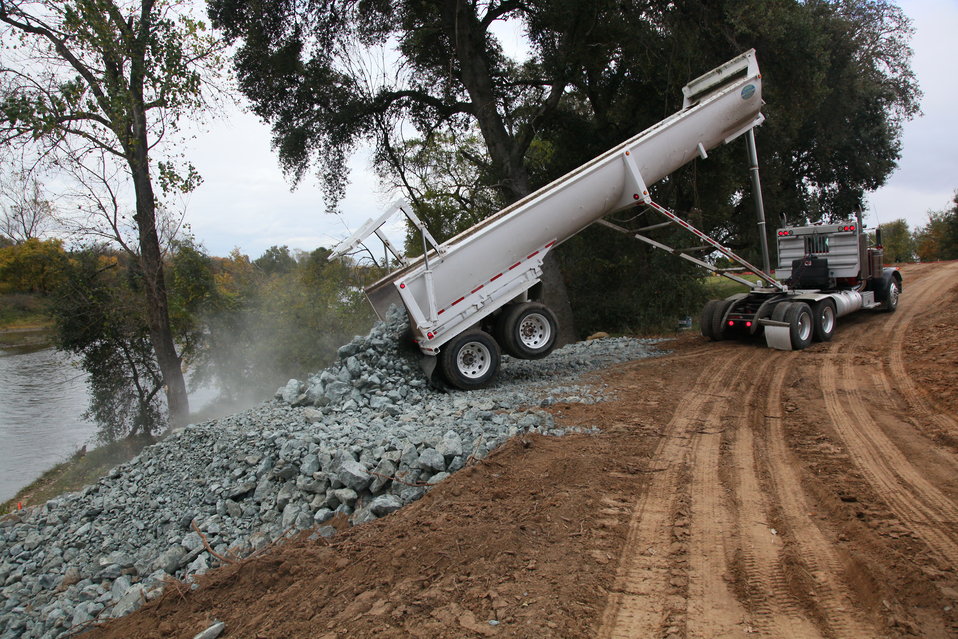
Large rock called rip-rap is delivered to a critical erosion site under repair along the American River’s south bank near Watt Avenue in Sacramento, Calif., Nov. 18, 2011. After the rock is placed below and above the water line, crews will add sturdier soil and native plantings along the bank. The work is part of the ongoing Sacramento River Bank Protection Project to repair erosion, levees and reduce flood risk for the Central Valley.